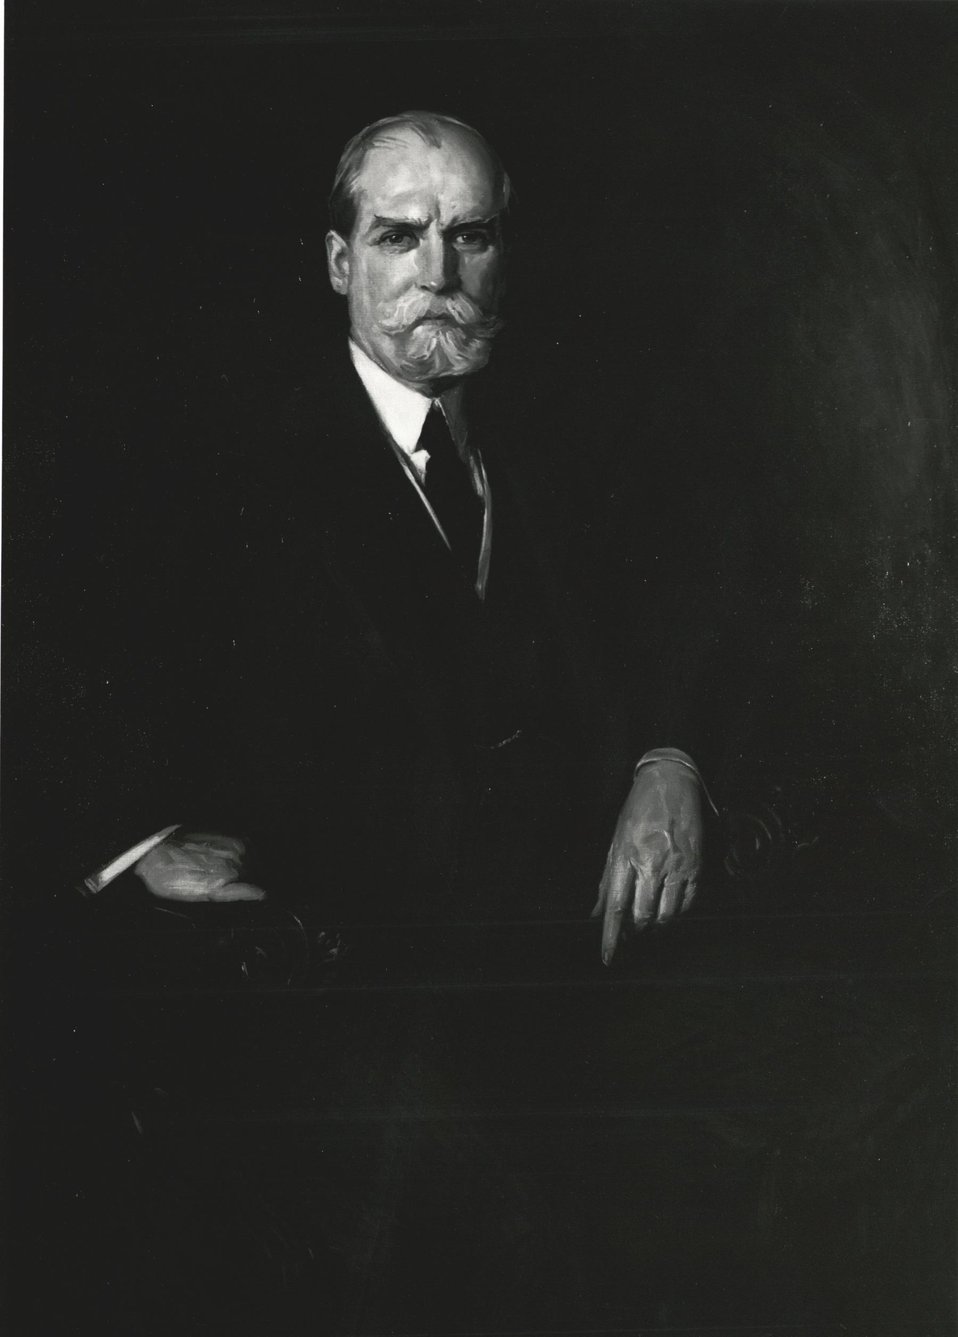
Charles Evans Hughes, U.S. Secretary of State, March 5, 1921 to March 4, 1924